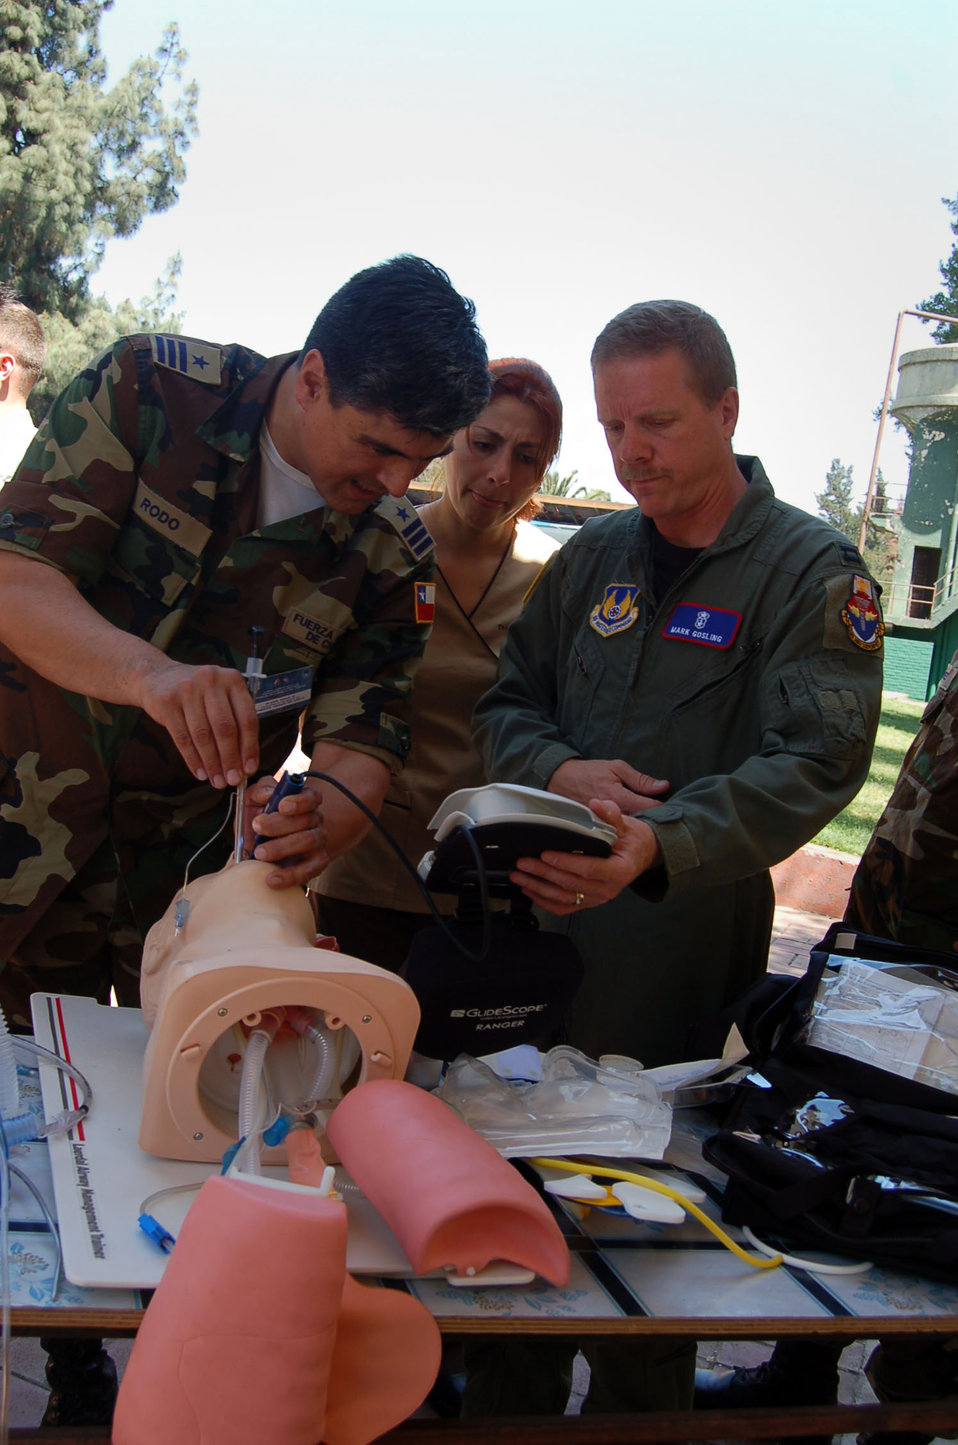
Airmen continue building South American partnerships

Lt. Col. Alger Rodo, the medical exchange coordinator for the Chilean Air Force, intubates, or inserts a tube into, the throat of a practice patient as U.S. Air Force Capt. Mark Gosling, from Brookes City-Base, San Antonio, instructs. Captain Gossling is part of about 70 Airmen participating in Operation Southern Partner, a Twelfth Air Force (Air Forces Southern) led event aimed at providing intensive, periodic subject-matter exchanges in the U.S. Southern Command area of focus, started Oct. 26.